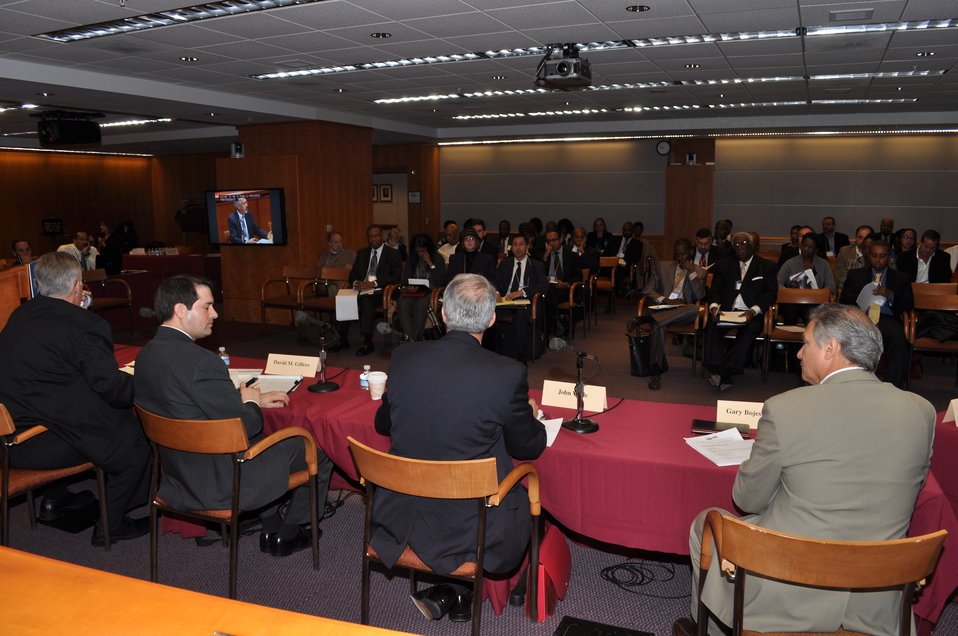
Capitalization Strategies

Workshop for small, minority and women owned businesses. Hosted by the Office of Communications Business Opportunities